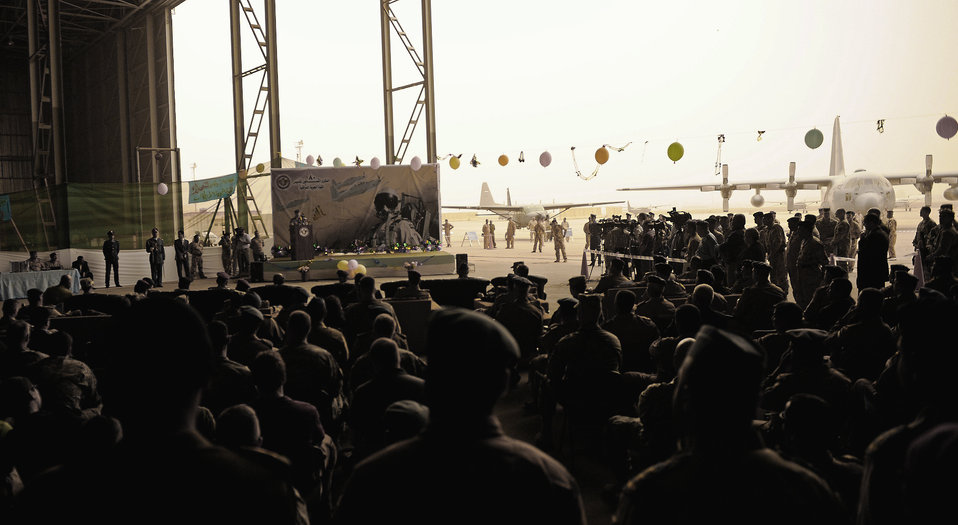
Iraqi air force leaders thank U.S advisers

Dozens of U.S. Air Force and Army advisors attended the Iraqi air force's 80th anniversary celebration April 21, 2011, at New Al-Muthana Air Base, Iraq. The event included speeches from high-level Iraqi air force officials and dignitaries, as well as a graduation ceremony for more than a dozen rotary wing pilots.